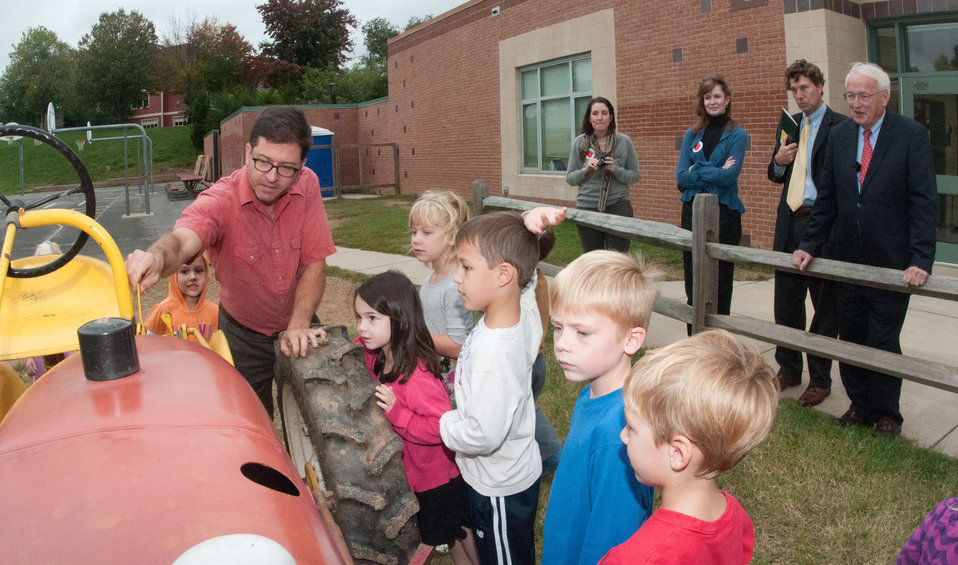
Under Secretary for Food, Nutrition and Consumer Services Kevin Concannon (r) looks on as Chris Guerre (l) shows students the throttle lever on a tractor he brought to Nottingham Elementary School in Arlington, VA, on Wednesday, October 12, 2011. Co-owner Sara Guerre said, “It’s important for the students to know where their food comes from” In this case, the lettuce in today’s meal came from their farm, nine miles away.